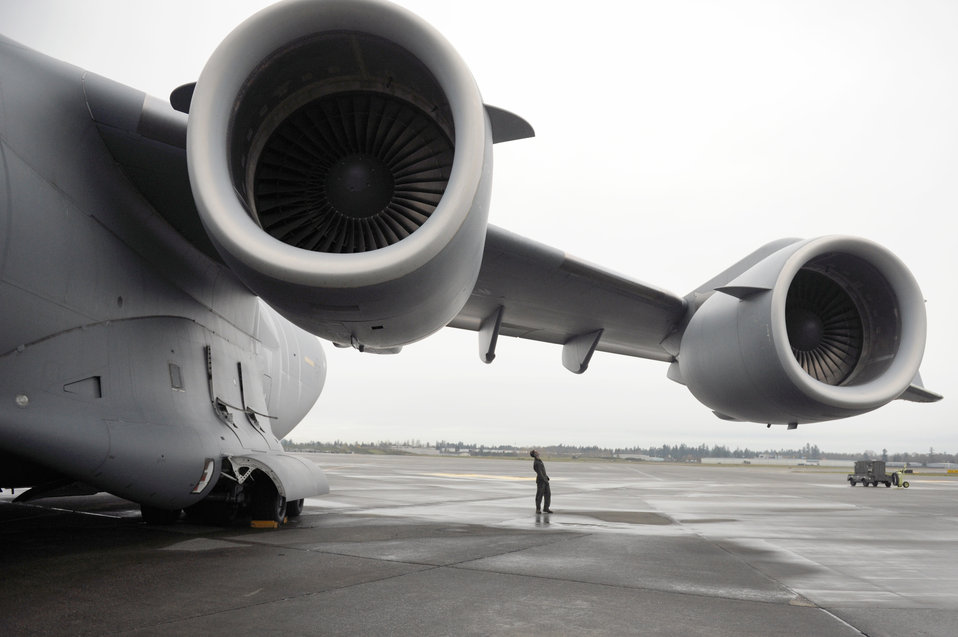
Hickam aircrew

Staff Sgt. Robert Wolf conducts a post-flight maintenance inspection on a C-17 Globemaster III, after a training mission Nov. 13, 2010, at Joint Base Lewis-McChord, Wash. Sergeant Wolf is a 15th Maintenance Squadron C-17 crew chief.